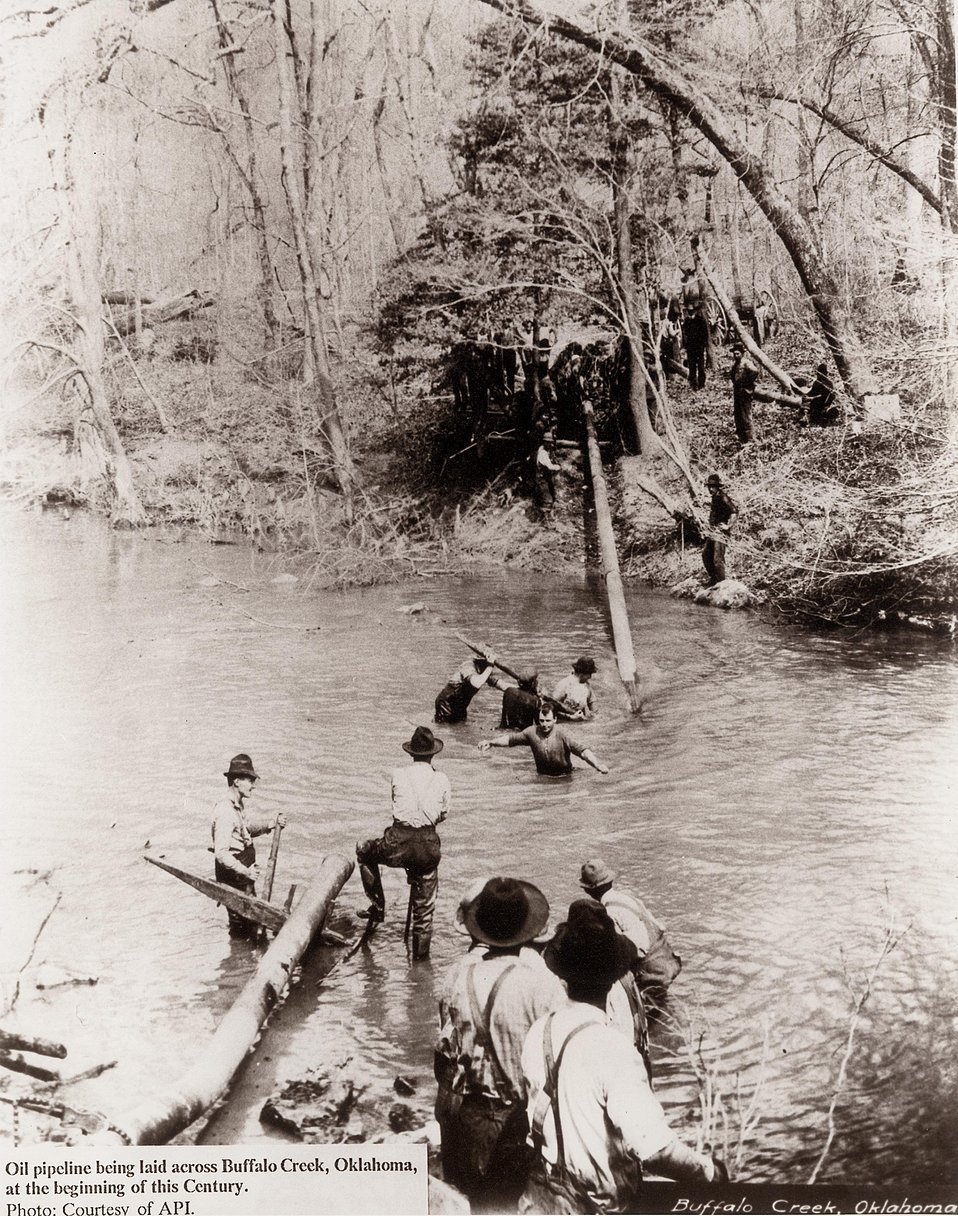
Oil pipeline being laid across Buffalo Creek, Oklahoma, at the beginning of this century.